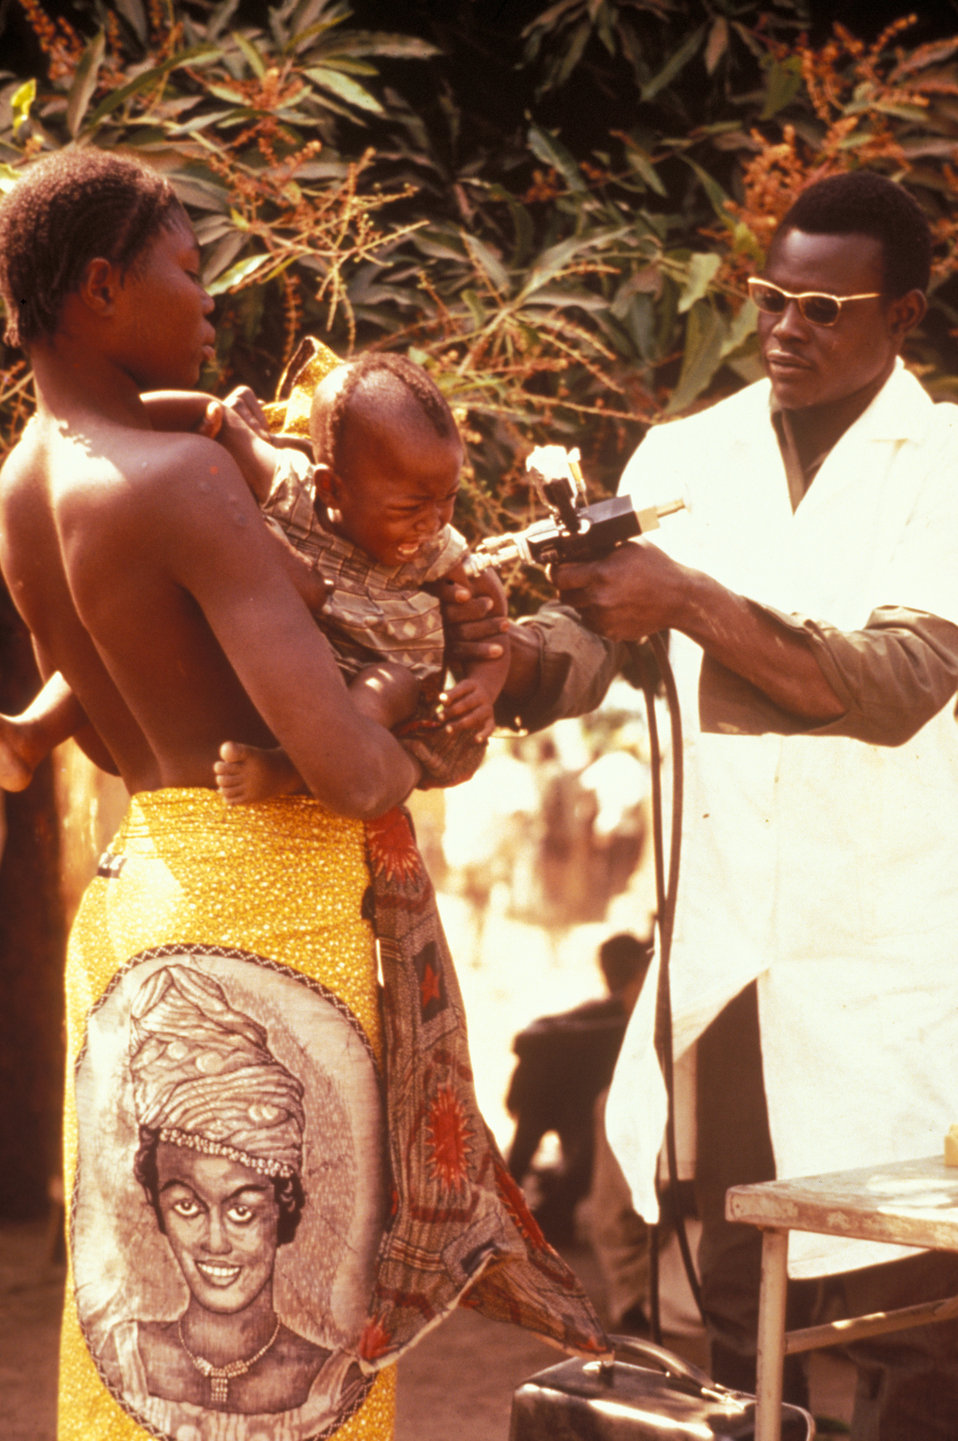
This photograph shows a child undergoing smallpox vaccination in Bangladesh using a Jet-Injector� delivery mechanism.